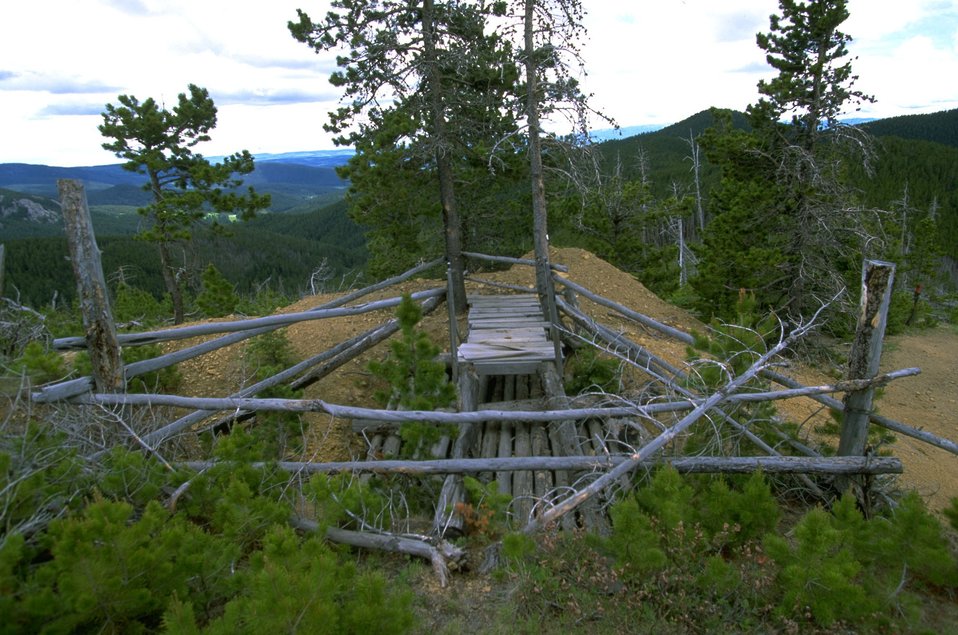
An old mine pit in the Judith Mountains